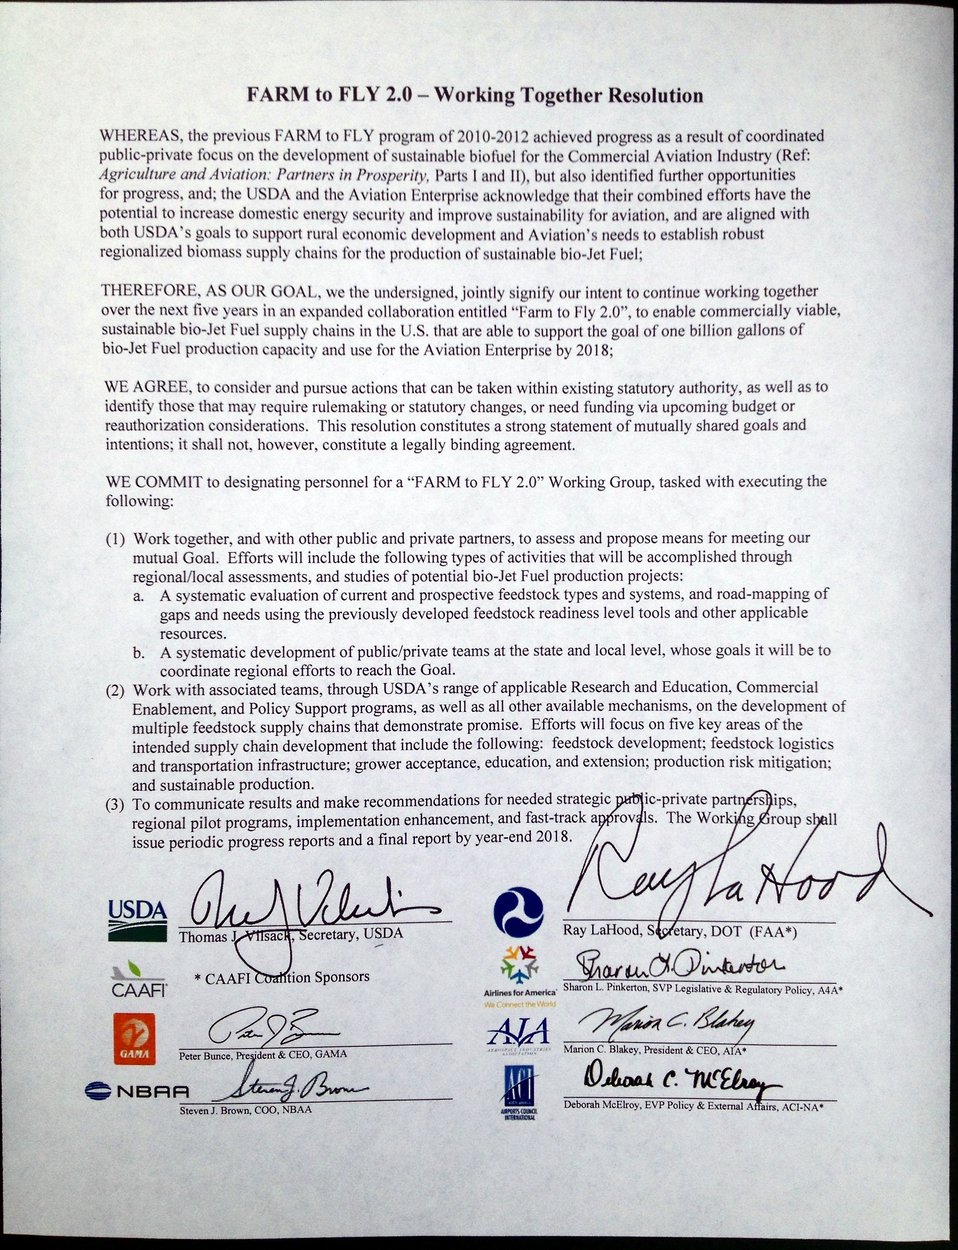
The memorandum of understanding (MOU), FARM to FLY 2.0 - Working Together Resolutions signed by Agriculture Secretary Tom Vilsack and Department of Transportation Secretary Ray LaHood, on Monday, April 15, 2013, at National Harbor, MD.